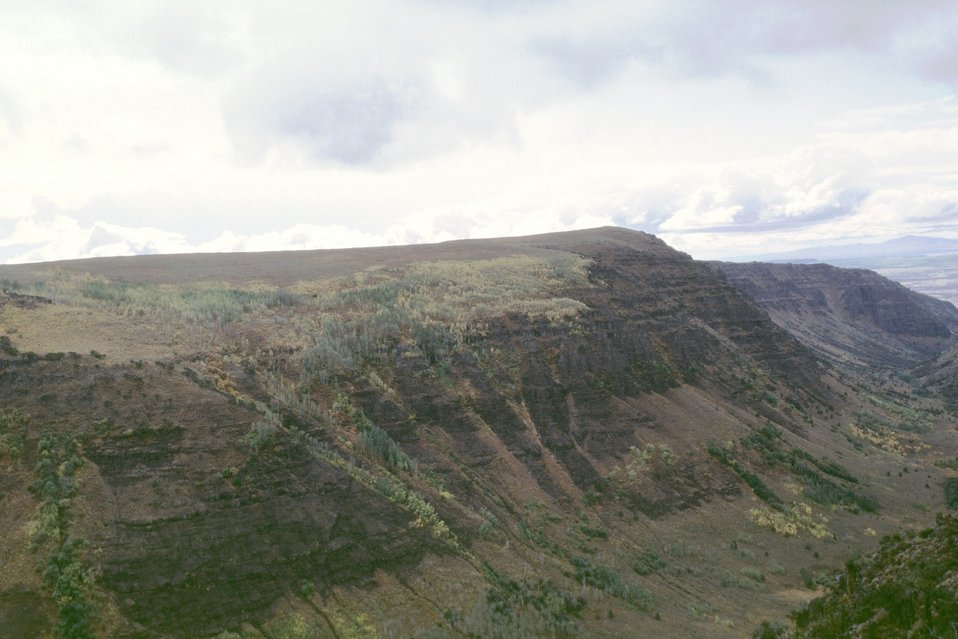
Little Blitzen looking West from Pruitt Overlook, Steen's Mountain.